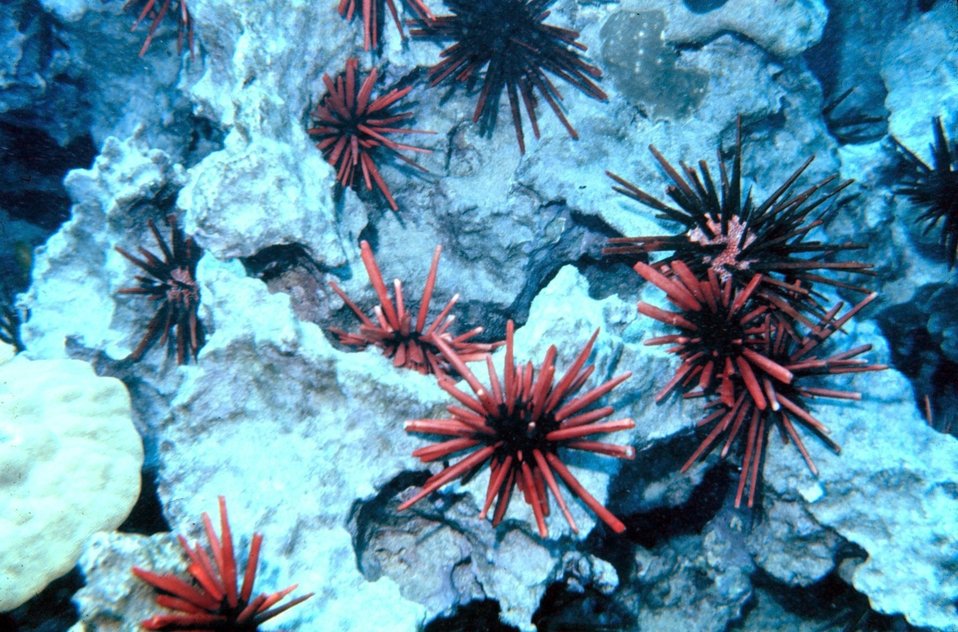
Red slate pencil urchins (Heterocentrotus mammillatus)